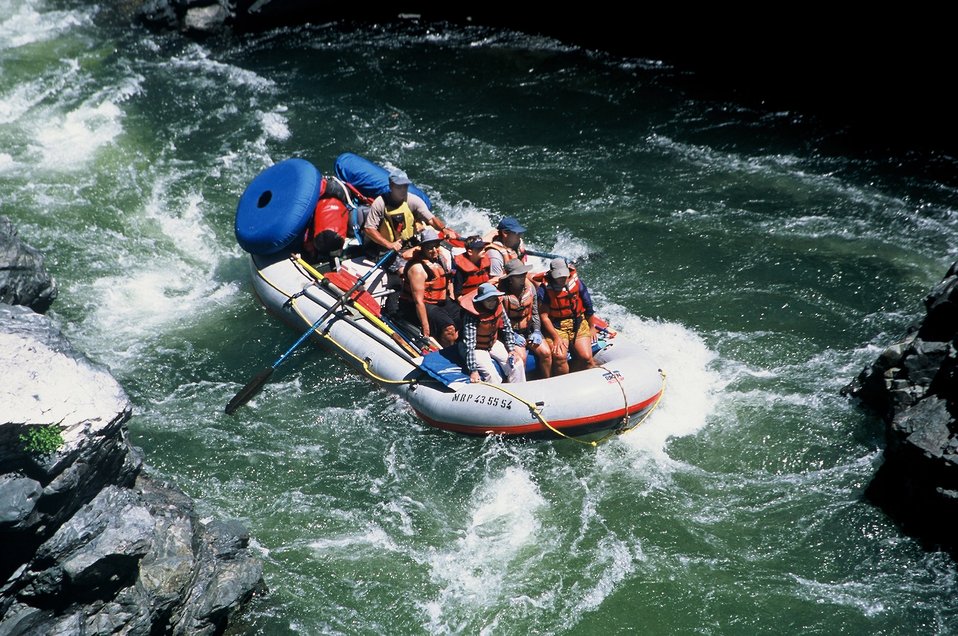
Coffee Pot